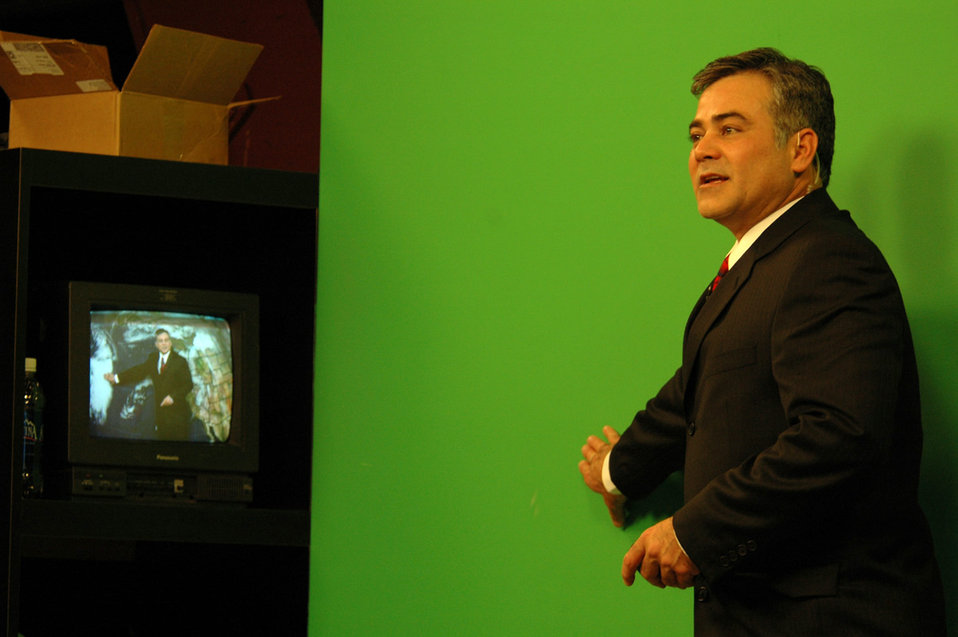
Washington weatherman

FAIRCHILD AIR FORCE BASE, Wash. (AFPN) -- Retired Master Sgt. Dave Law, broadcast weatherman, KHQ6, uses a green screen to transpose local area weather maps and other weather-related information during a broadcast Jan. 6. He retired from the Air Force in November after serving 23 years as a meteorologist.